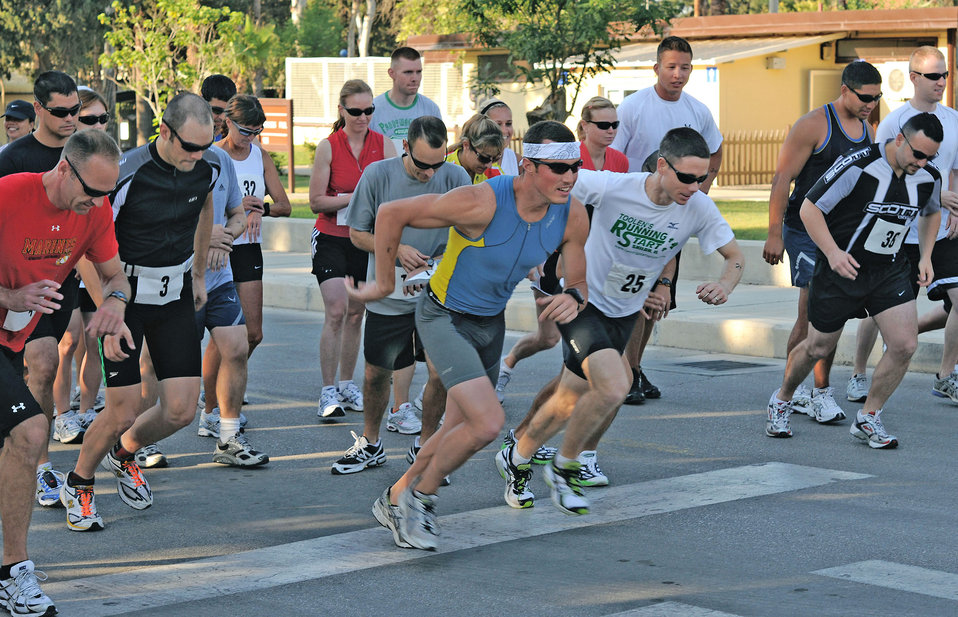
Incirlik Triathlon

At the gun, triathlon participants take off for the start of the Sprint Triathlon held recently at Incirlik Air Base, Turkey. Thirty-eight Airmen, civilians and family members participated in the competition. The triathlon added a twist to classic triathlon because the order of events was reversed, starting with the run, then the bike and swim instead of the classic swim, bike and run.